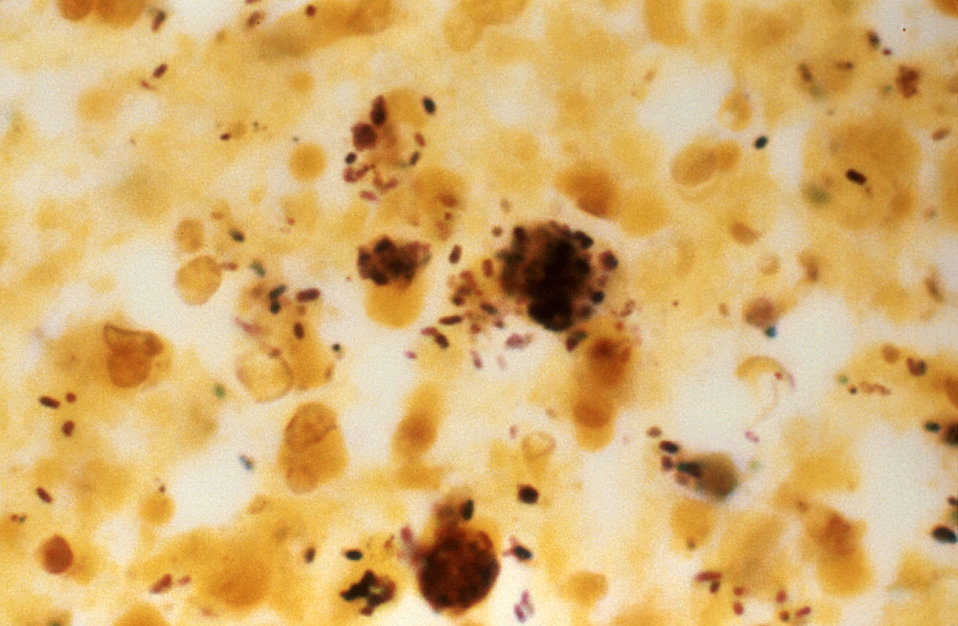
This silver-stained micrograph of a lung tissue specimen revealed the presence of Legionella pneumophila bacteria. The specimen was taken from a victim of the 1976 Legionnaires' disease outbreak in Philadelphia.